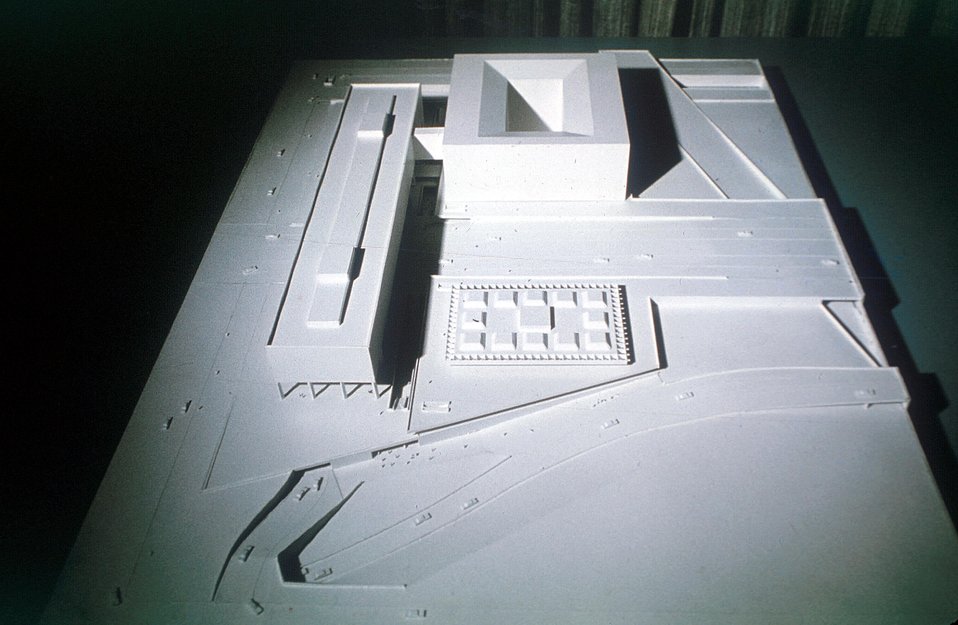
Federal Office building No. 5 Washington DC